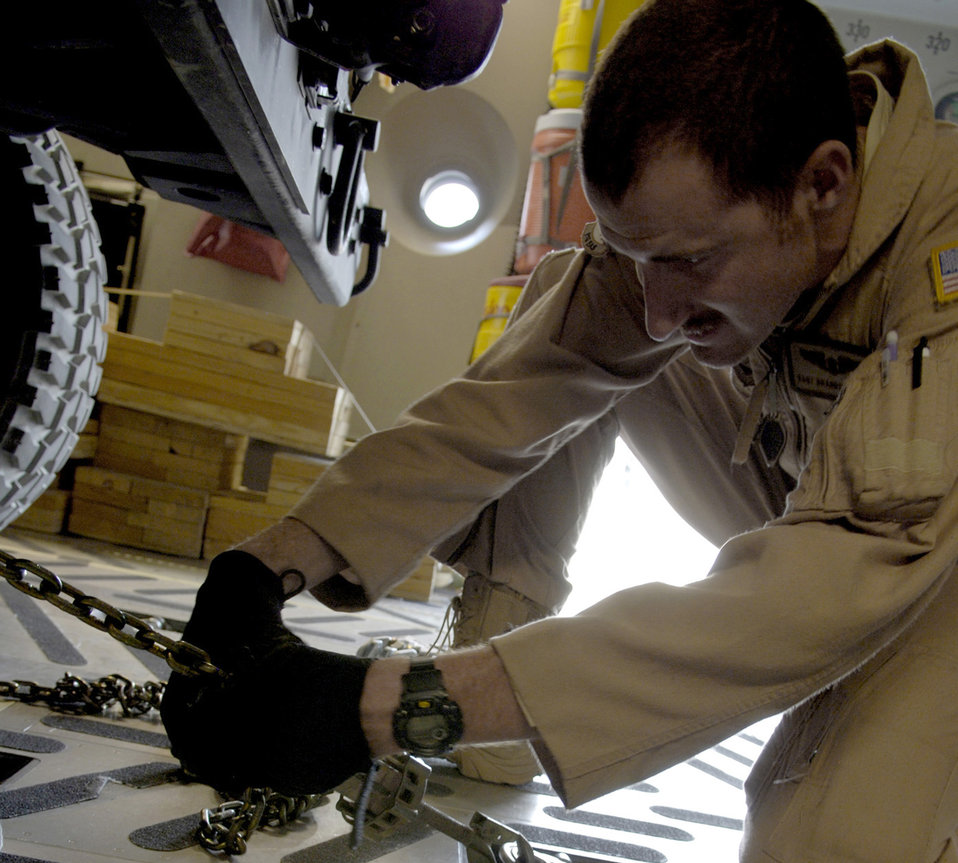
Loading a C-17

Staff Sgt. Brandon Hower connects an anchoring device inside the cargo bay of a C-17 Globemaster III June 13, 2011, at Bagram Airfield, Afghanistan. Sergeant Hower is a loadmaster assigned to the 816th Expeditionary Airlift Squadron.